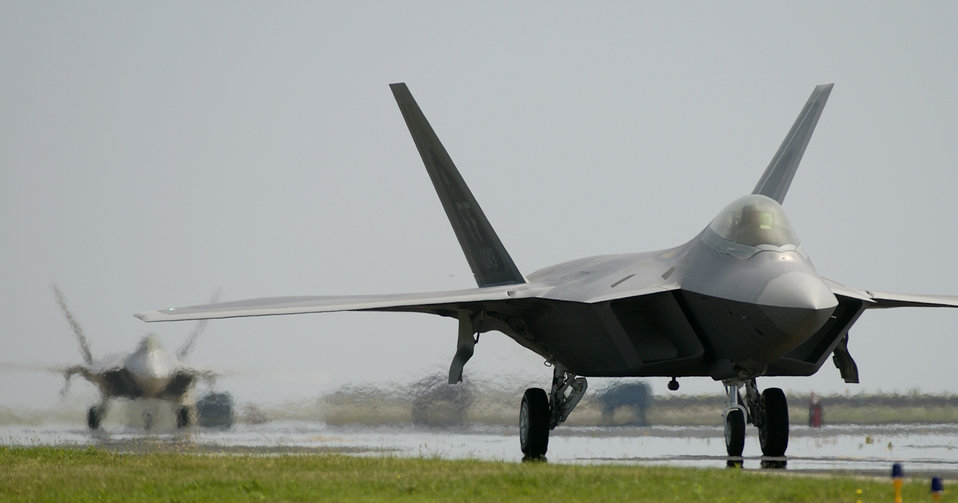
Kadena Airmen ready for visiting Raptors

Two F-22 Raptors taxi down the runway at Langley Air Force Base, Va. A squadron of Raptors is scheduled to deploy to Kadena Air Base, Japan, as part of U.S. Pacific Command's theater security package in the Western Pacific in February. This will be the first overseas deployment for the Air Force's newest fighter.